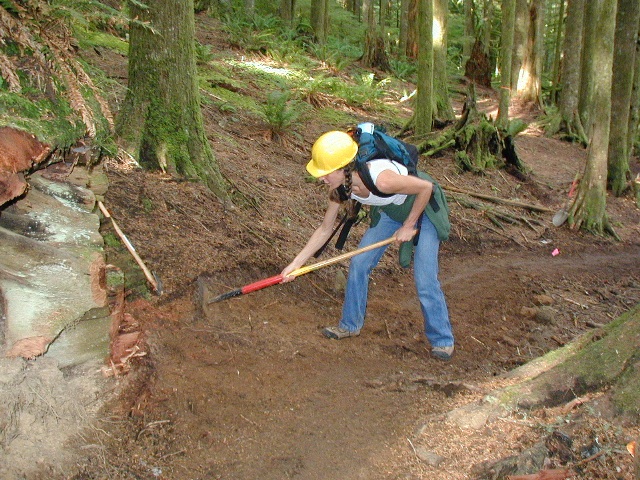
A volunteer widens part of a hiking trail